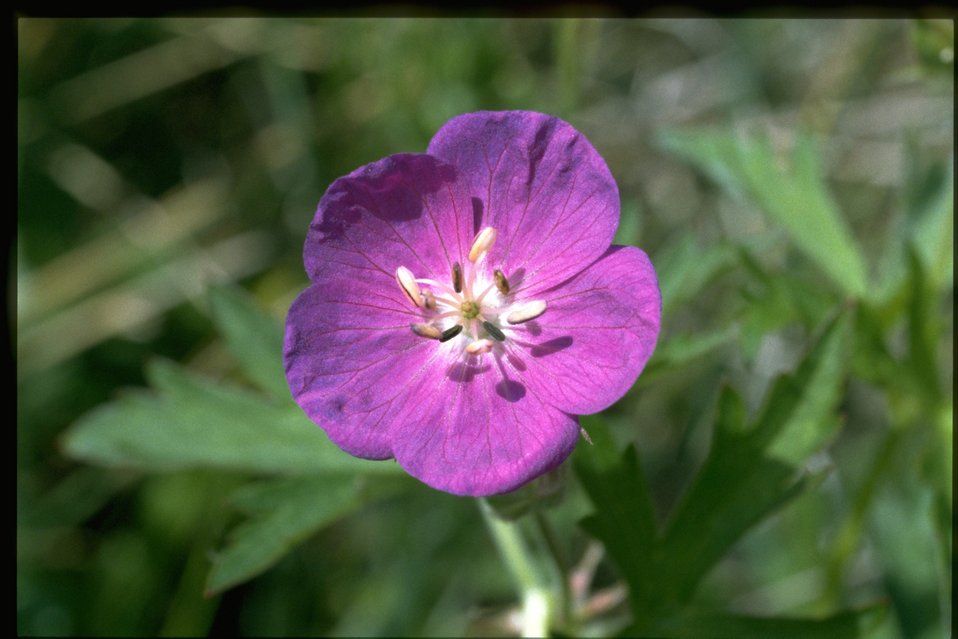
Medium shot of Geranium oreganum.